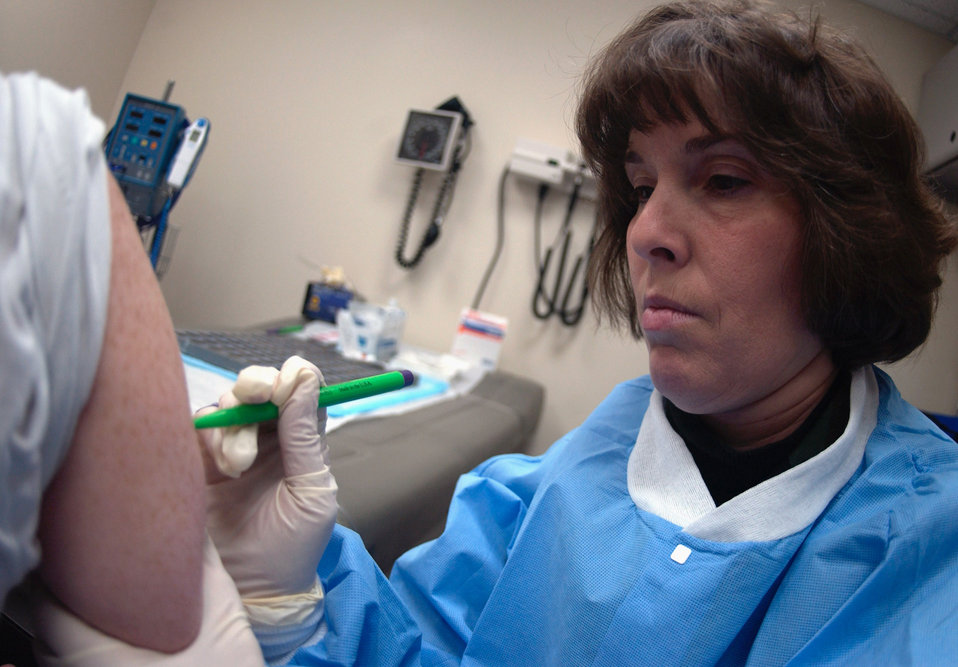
Doing shots

WASHINGTON -- Air Force Reserve Maj. Marty Maddox marks a Pentagon employee's arm before vaccinating her against the smallpox virus in the Pentagon's health care clinic Jan. 21, 2003. Maddox is an individual mobilization augmentee nurse who was activated last year.